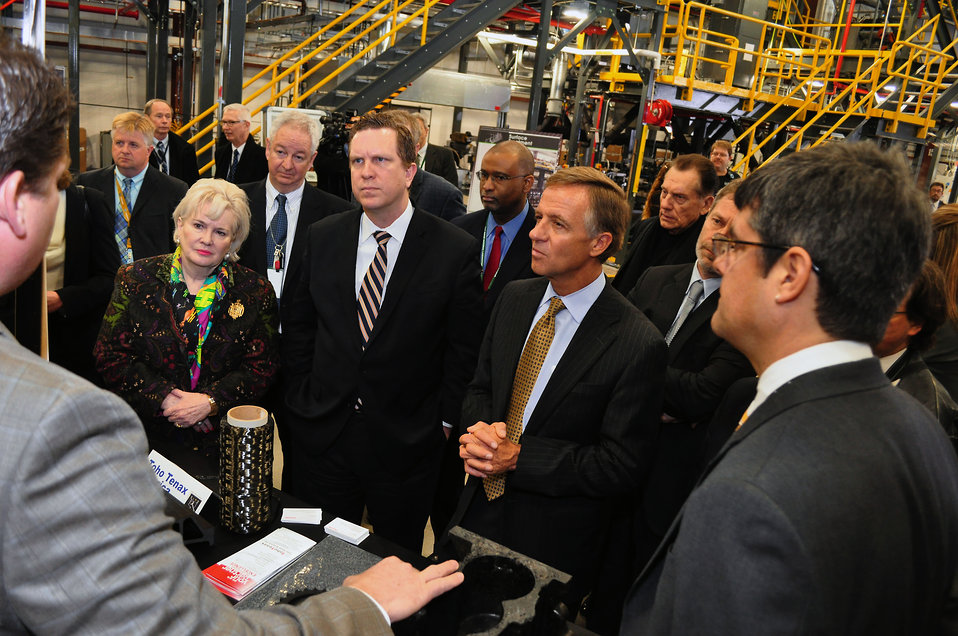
Carbon Fiber Technology Facilty Open House Oak Ridge Tennessee

13-025 DOE photo Lynn Freeny